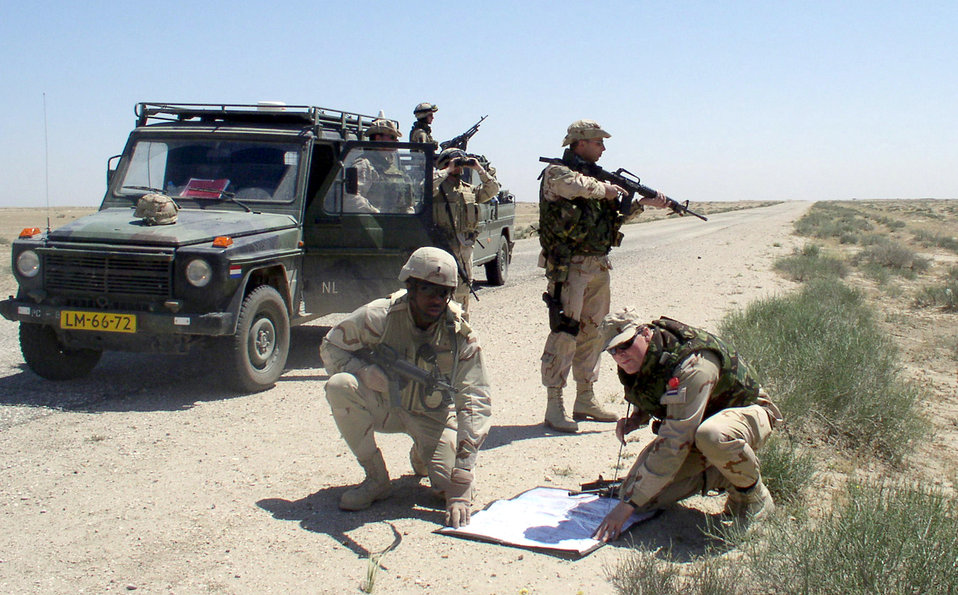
Keeping an eye on things

TALLIL AIR BASE, Iraq -- First Lt. Robert Moore (bottom left) surveys off-base terrain near here with Dutch Lt. Jeroen Mol (bottom right), an intelligence officer, while Dutch Sgt. Mark deVos takes a stand-off security position. The event was part of a combined U.S. and Dutch base-security assessment designed to improve the defensive posture here. Lieutenant Moore is assigned to the 407th Expeditionary Security Forces Squadron.